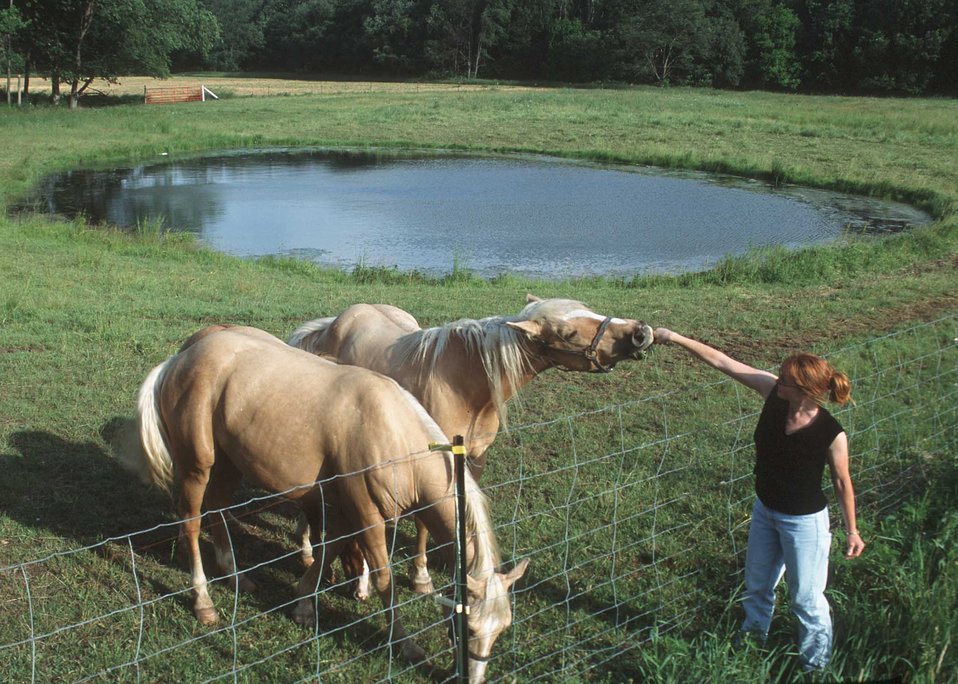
Public Affairs Specialist Chris Coulon petting horses near small farm pond in pasture with horses. Allegan County, Michigan.